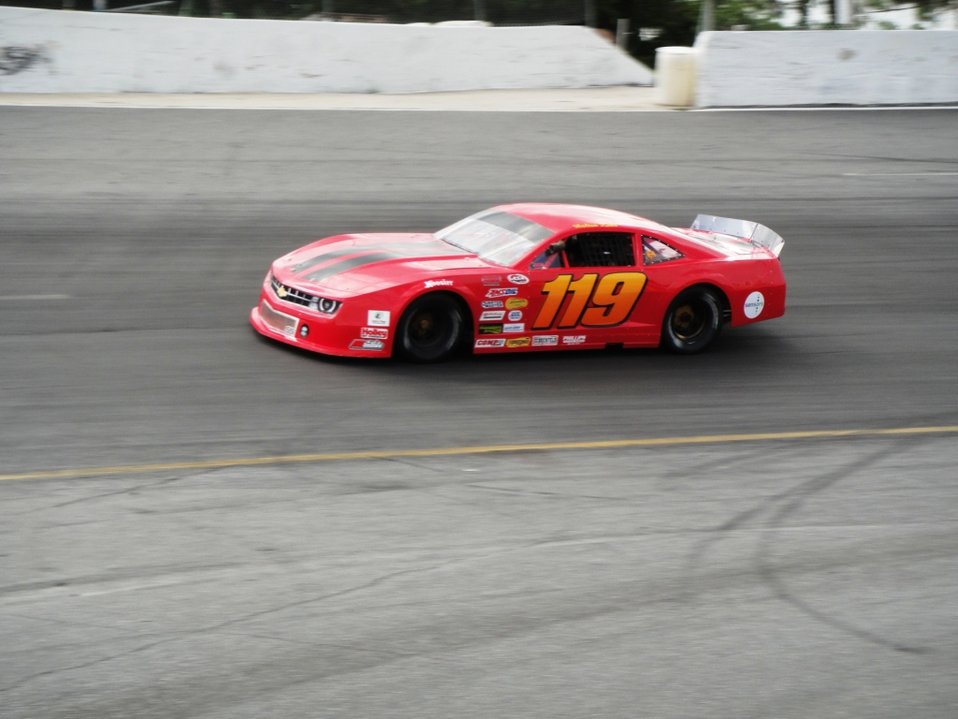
Project G.R.E.E.N. Camaro does laps at new Smya raceway.